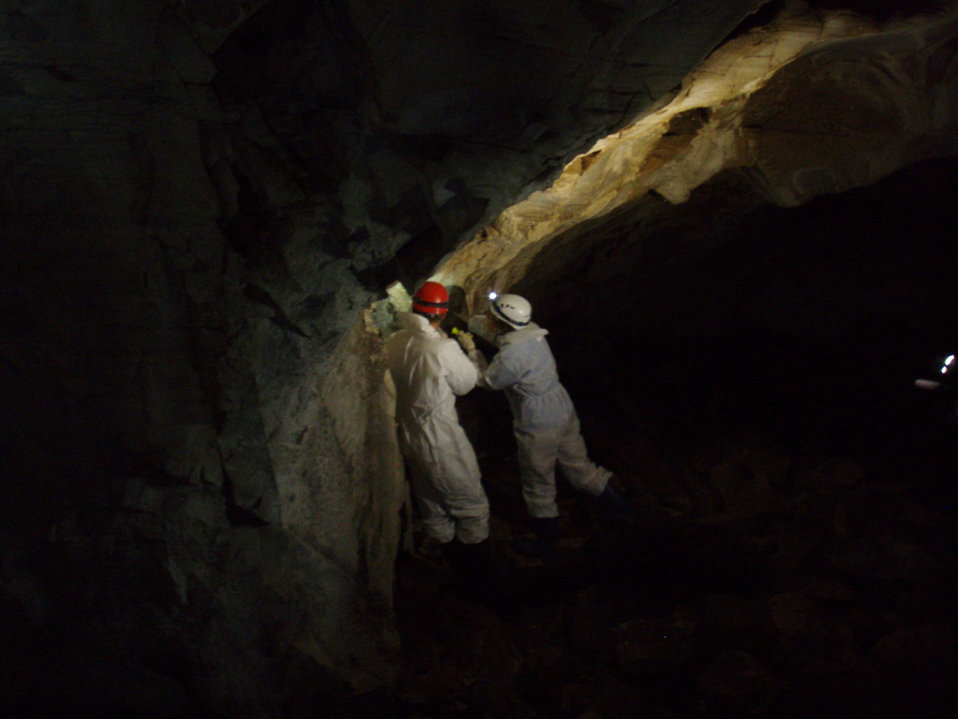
Researchers look for bats in Aeolus Cave

USFWS and Vermont Fish and Wildlife Department biologists look for live bats in Aeolus Cave.